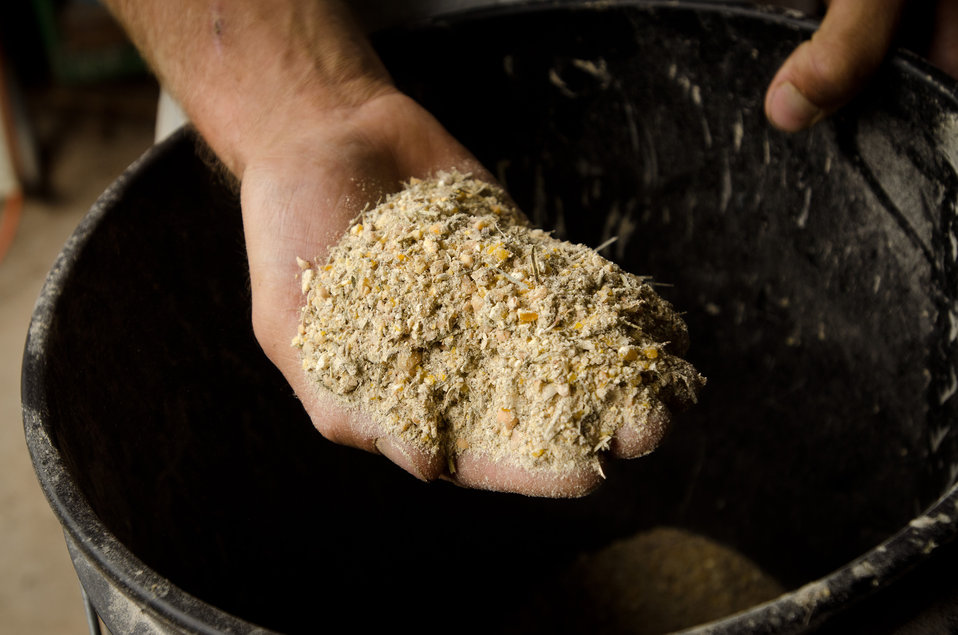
Organic feeds supplement the diet of layer and broiler chickens at Nick’s Organic Farm, in Adamstown, MD, on Friday, July 12, 2013. The farm, owned by Nick Maravell, produces Black Angus beef, chicken, turkey, eggs, hay, soybeans, corn, alfalfa, orchard grass, rye; and other crops. The cattle are100% grass-fed receiving certified organic pasture, certified organic hay (in winter), water and mineral salts mixed with sea kelp. The cattle are not fed hormones, antibiotics or animal products. Poultry feed from grain is ground from organic grain. The poultry also graze on organic pastures. The farm has conducted on-farm research with federal, state and non-profit agencies to refine organic practices. An organization such as the U.S. Department of Agriculture (USDA) Agricultural Research Service (ARS) center in Beltsville has been able to conduct research to improve organic crops and to breed and manage the cattle so that they have.